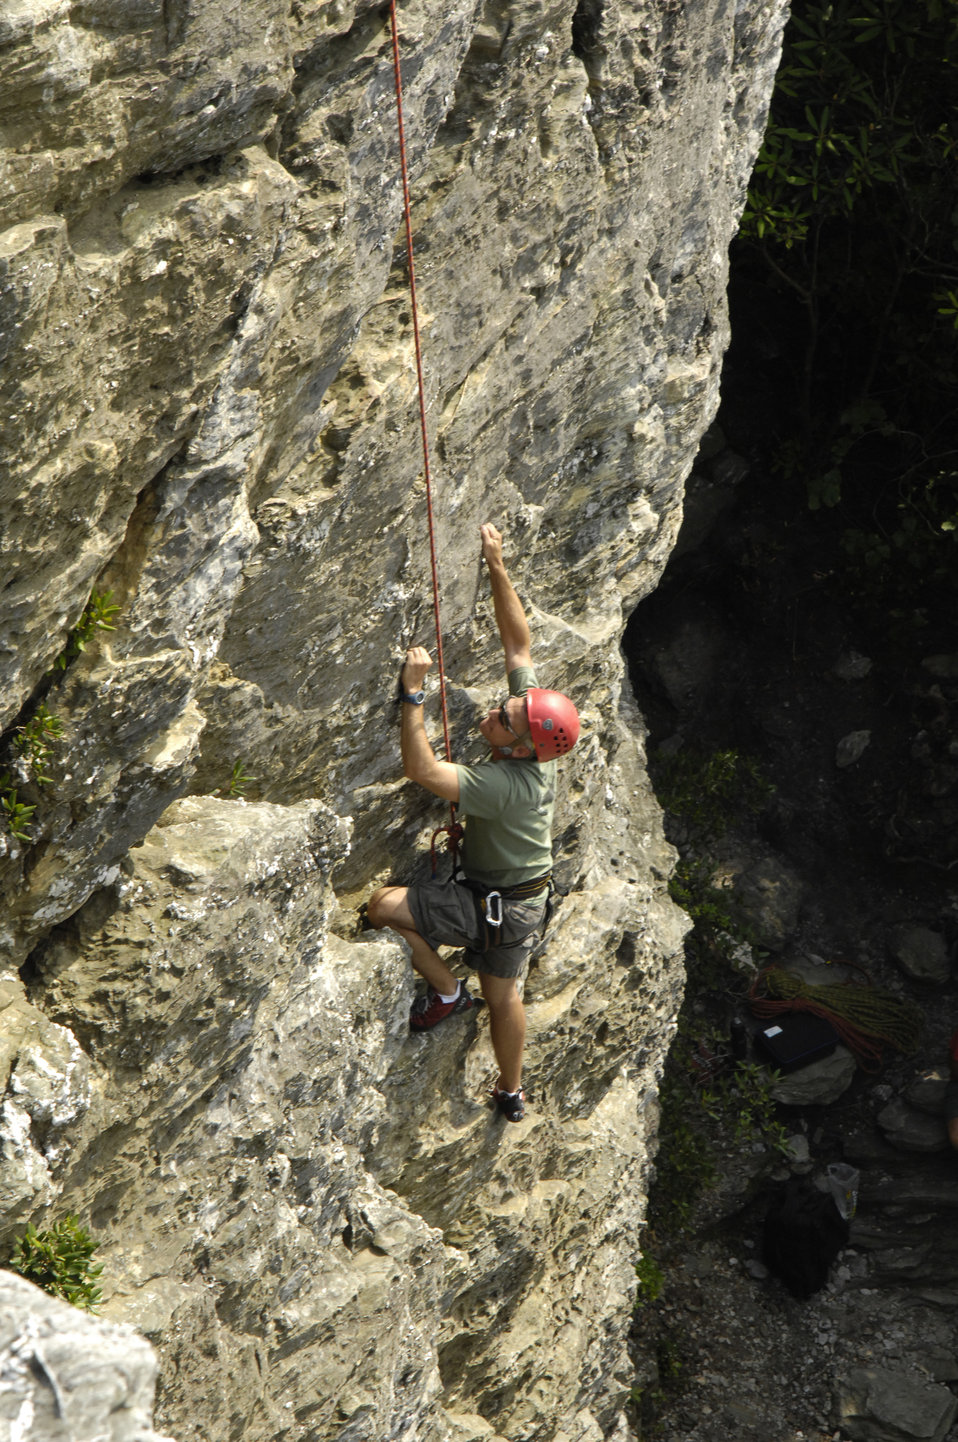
A visitor to a National Forest in North Carolina enjoys rock climbing on June 24, 2009. National Forests offer visitors access to a diversity of outdoor recreational opportunities such as hiking, biking, riding horses, driving off-highway vehicles, picnicking, camping, hunting, fishing, rock climbing, and navigating waterways. Visitors can view wildlife, scenic vistas, and explore historic places.